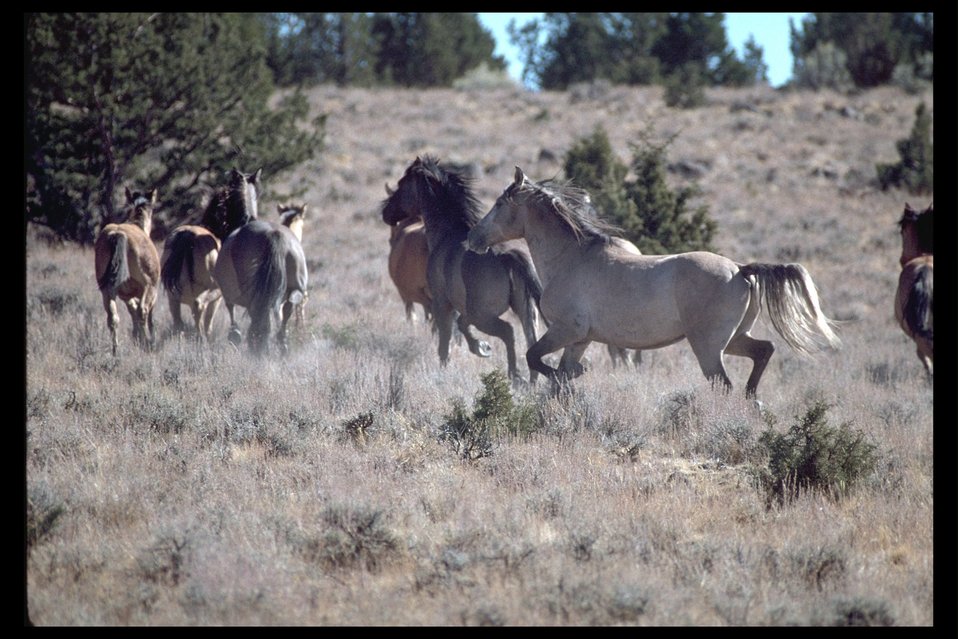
Kiger mustangs on the range of Kiger HMA.